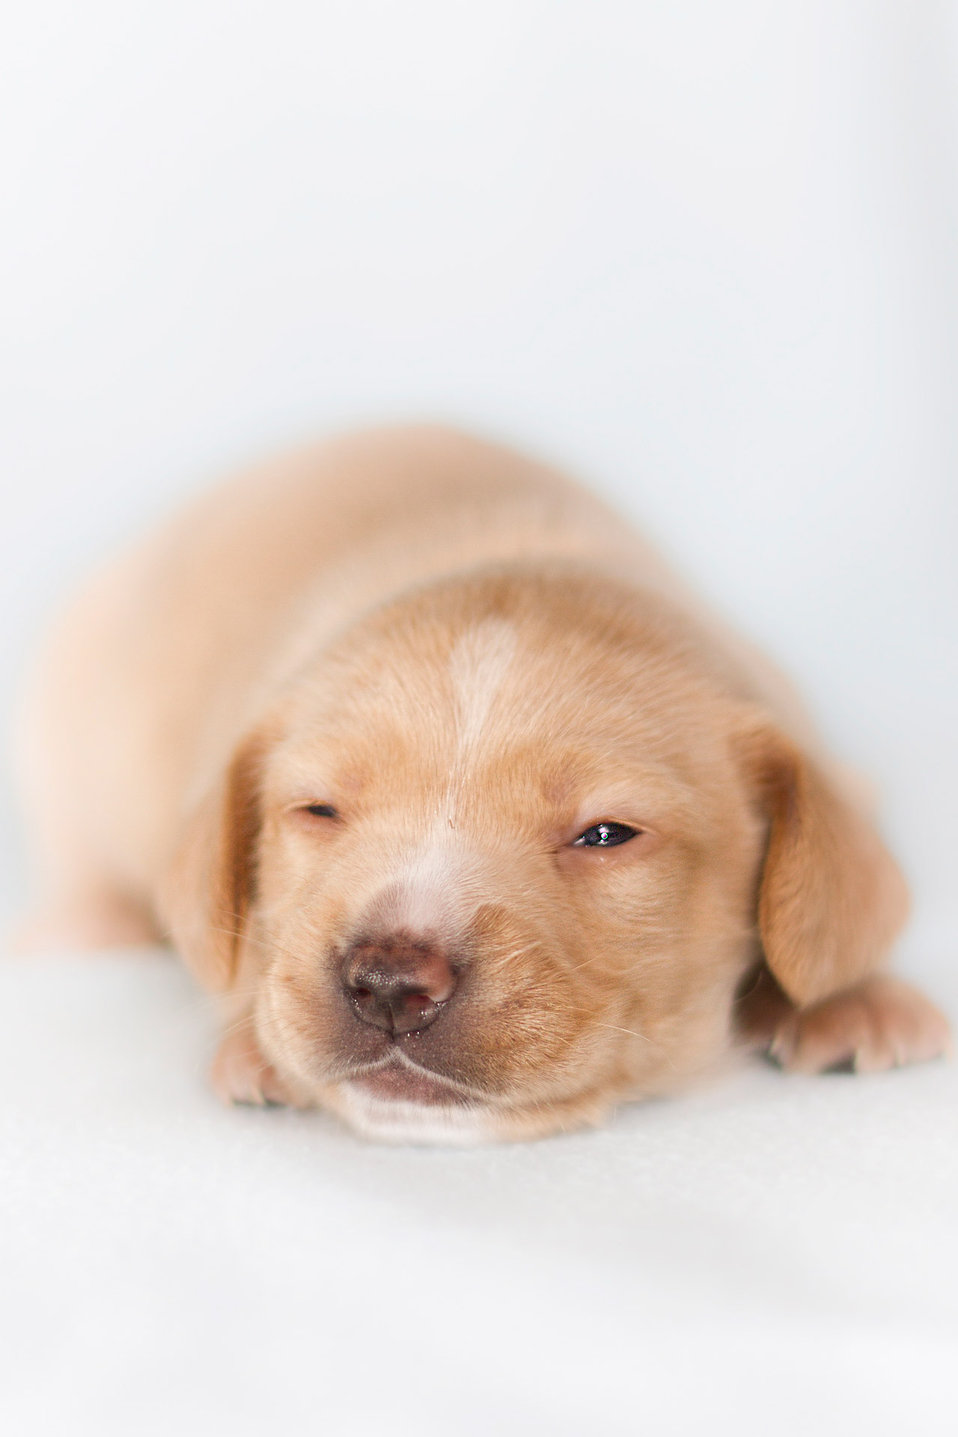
Puppy with one eye open.